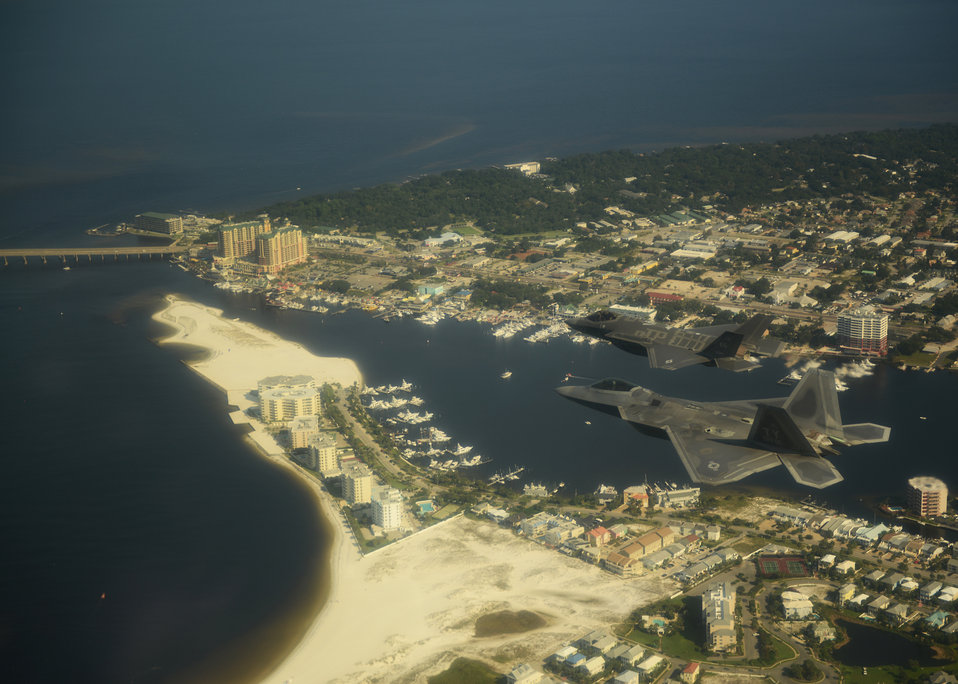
Fifth-generation formation

An F-22A Raptor, foreground, from the 43rd Fighter Squadron at Tyndall Air Force Base, Fla., and an F-35A Lightning II joint strike fighter from the 33rd Fighter Wing at Eglin Air Force Base, Fla., soar over the Emerald Coast Sept. 19, 2012. This was the first time the two fifth-generation fighters have flown together for the Air Force.